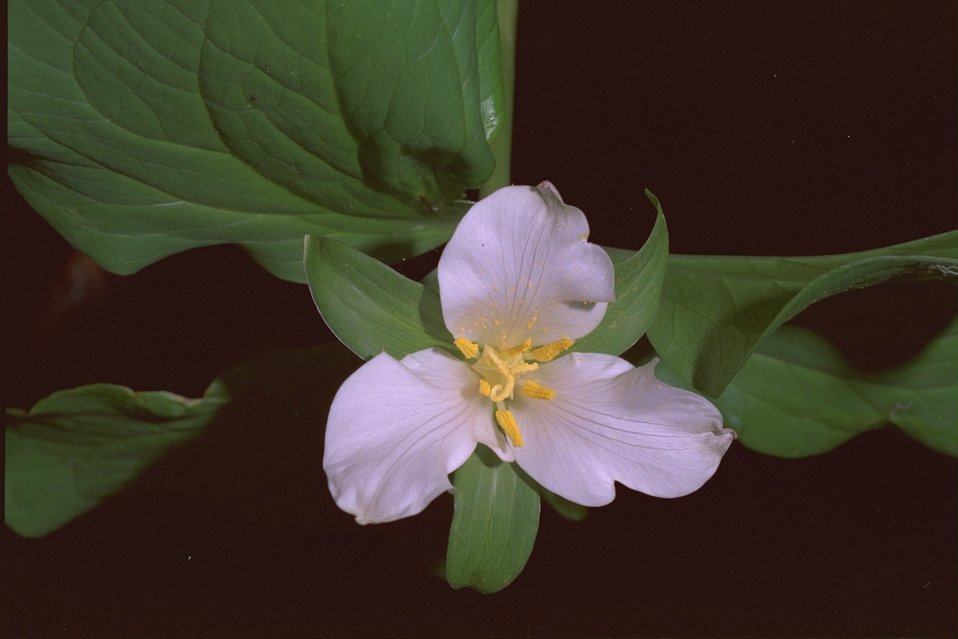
Western Trillium (Trillium ovatum) along Wards Creek.